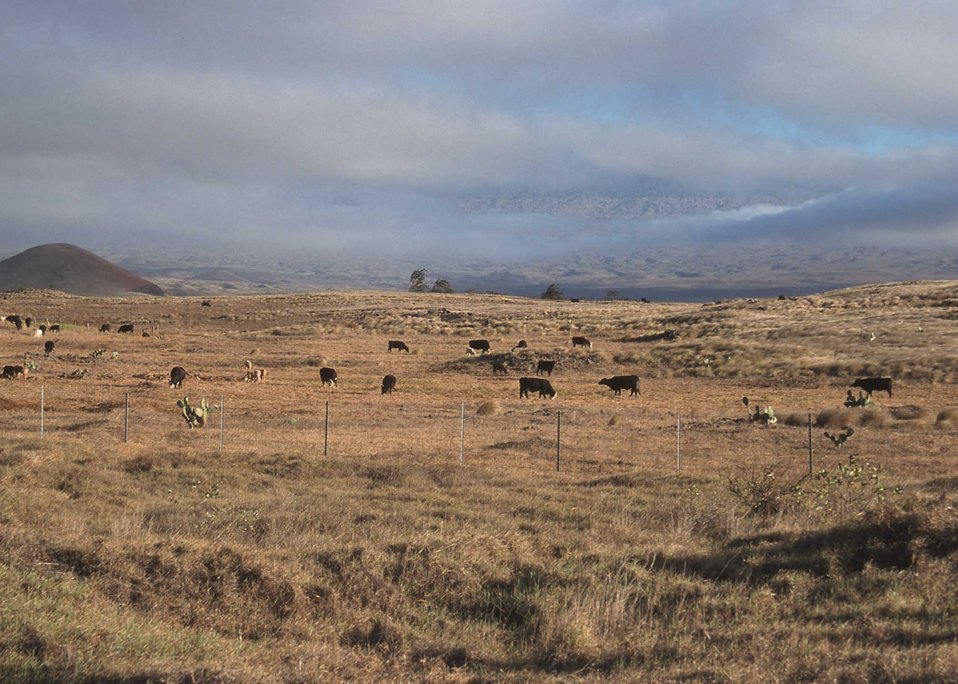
Rangeland in Hawaii beginning to show the effects of drought.